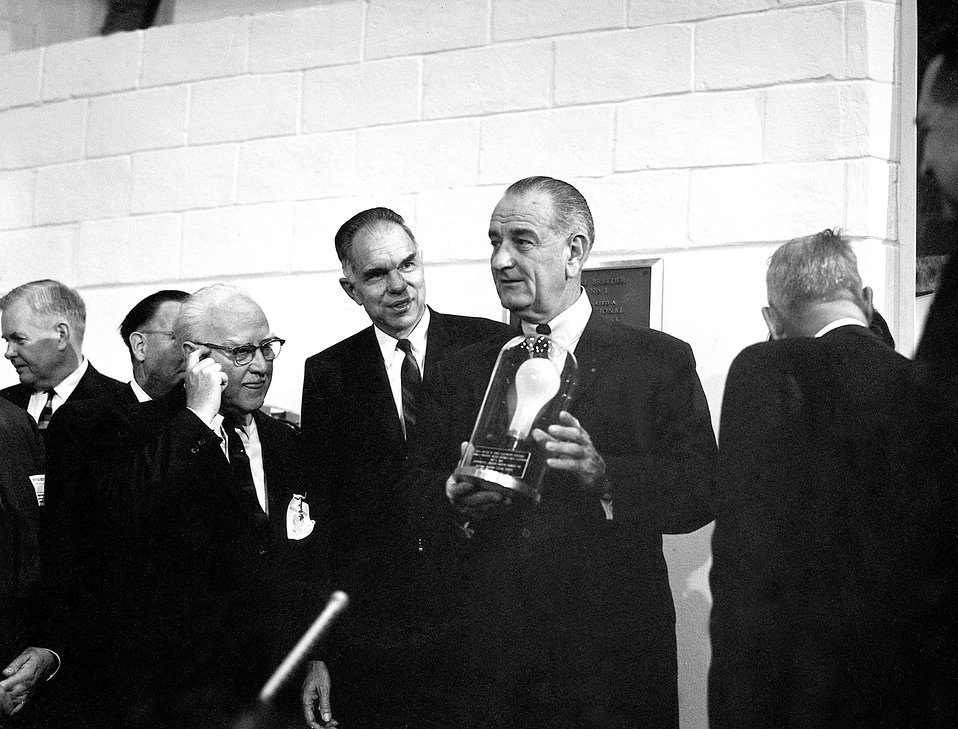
President Lyndon B. Johnson and the first light bulb.